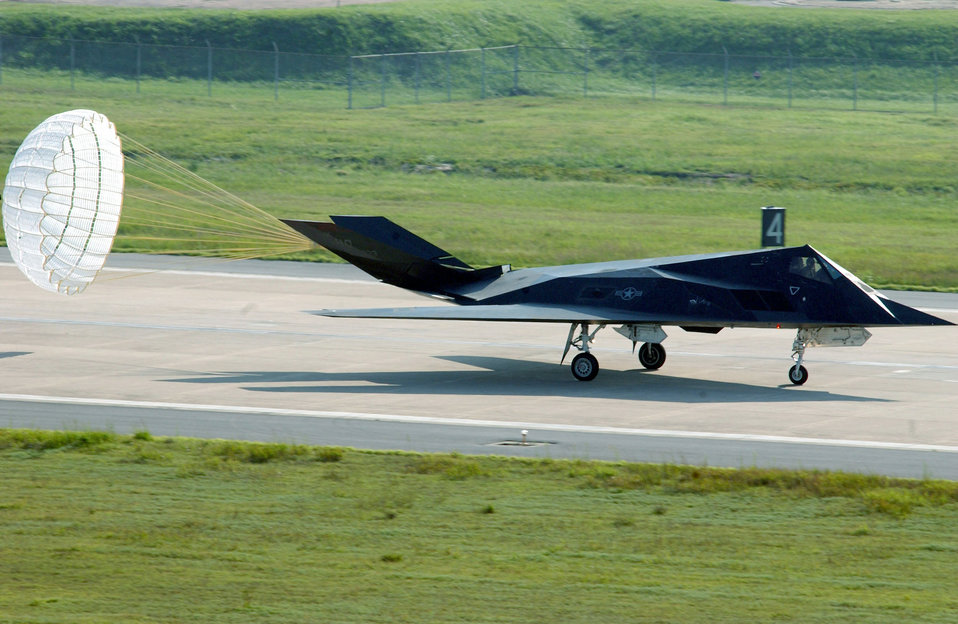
Easy landing

KUNSAN AIR BASE, South Korea -- An F-117 Nighthawk lands safely after a training mission here recently. The aircraft is assigned to the 9th Expeditionary Fighter Squadron.